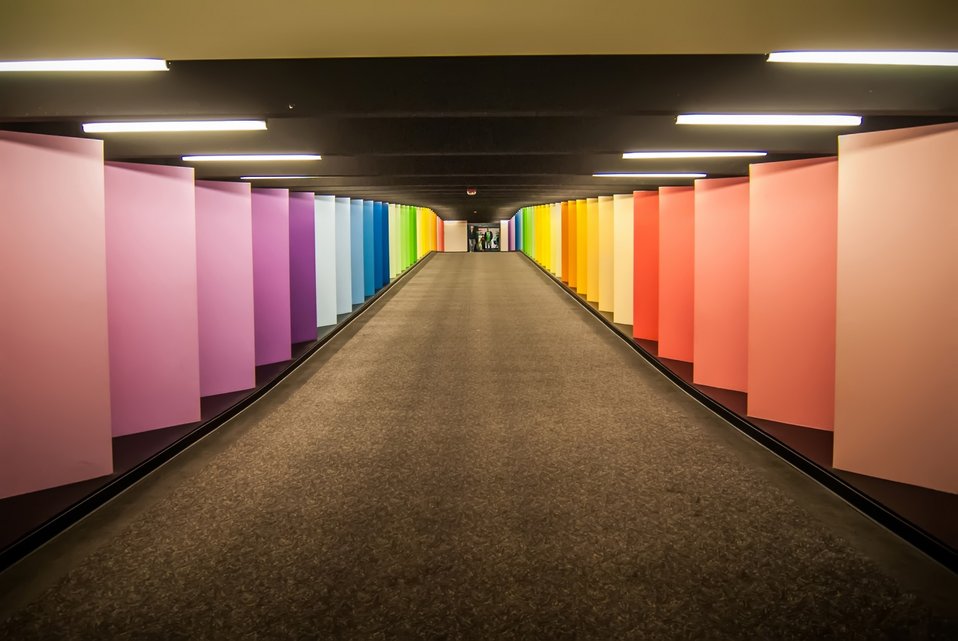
Rainbow corridor.